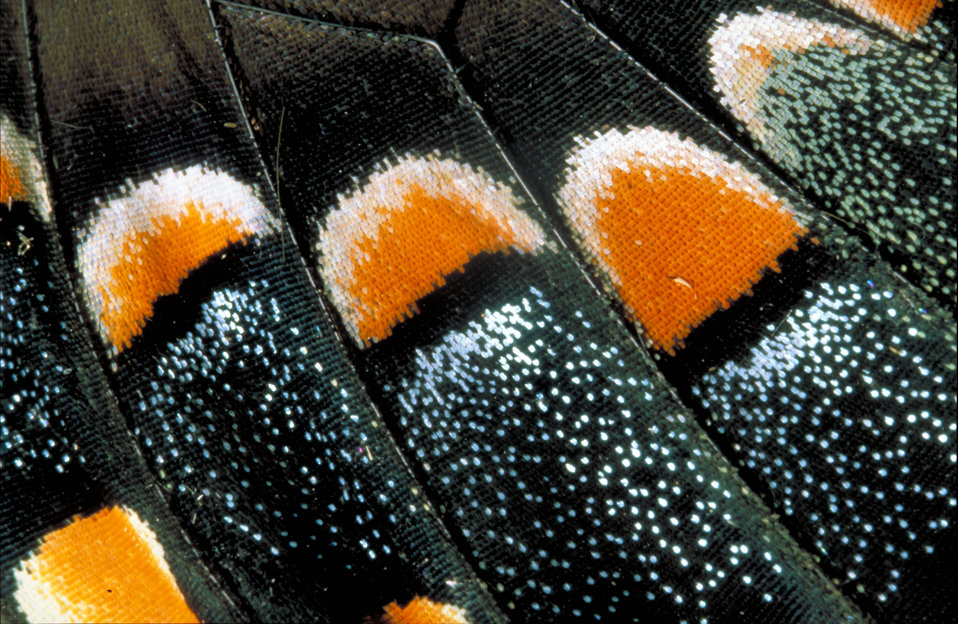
butterfly scale pattern